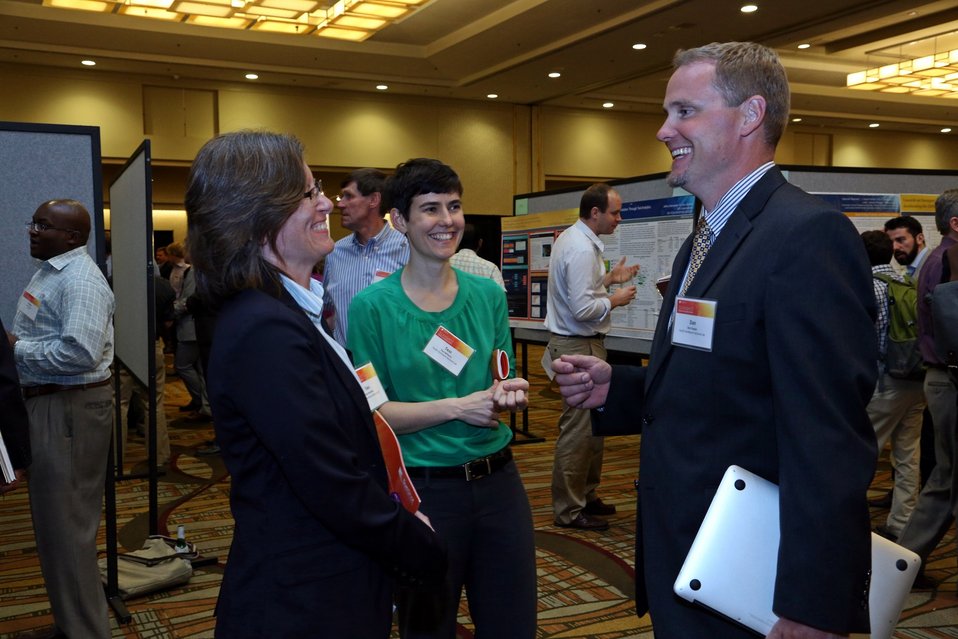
Tech Forum 25

Attendees and awardees connect at the Tech Forum.